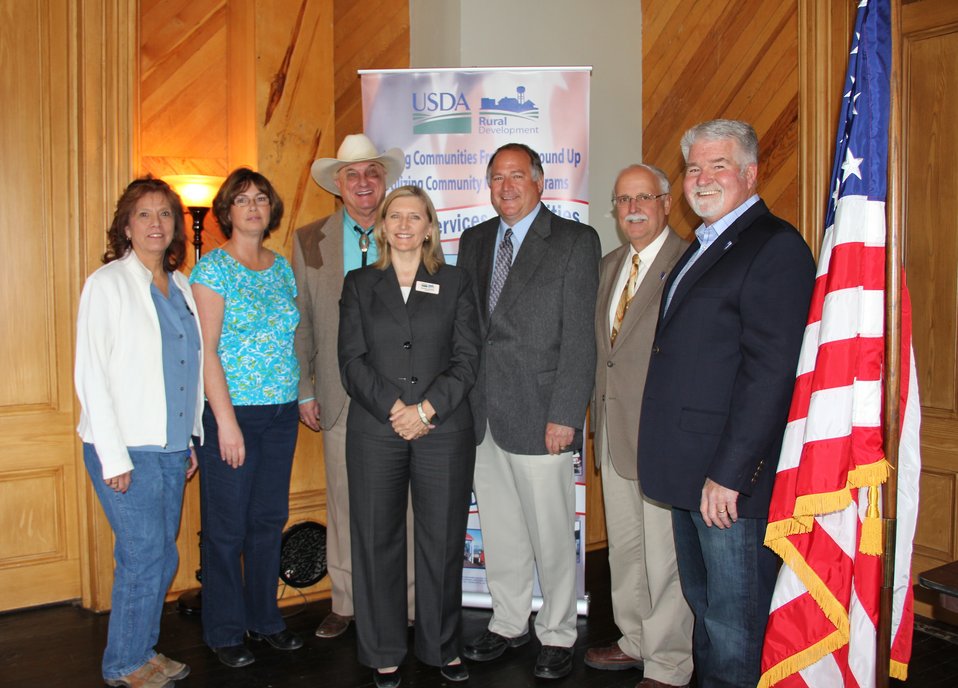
Nevada officials celebrate wastewater treatment project

Officials with the U.S. Department of Agriculture Rural Development and Storey County pose for a photo April 19, 2013 during a ceremony recognizing the U.S. Army Corps of Engineers Sacramento District for its design and environmental-coordination assistance of a new wastewater collection and treatment system near Carson City, Nev. The district contributed $1.7 million of the $7 million project under Section 595 of the Water Resources Development Act 1999. Section 595 assists communities with critical water and wastewater infrastructure improvements. (From left) Barbara Allen, USDA RD; Cheryl Couch, USDA RD; Lance Gilman, Storey County commission; Sarah Adler, USDA RD; Marshall McBride, Storey County commissioner; Pat Whitten, Storey County manager; Mike Nevin, Storey County public works director. The event was also attended by U.S. Rep. Mark Amodie (not pictured).